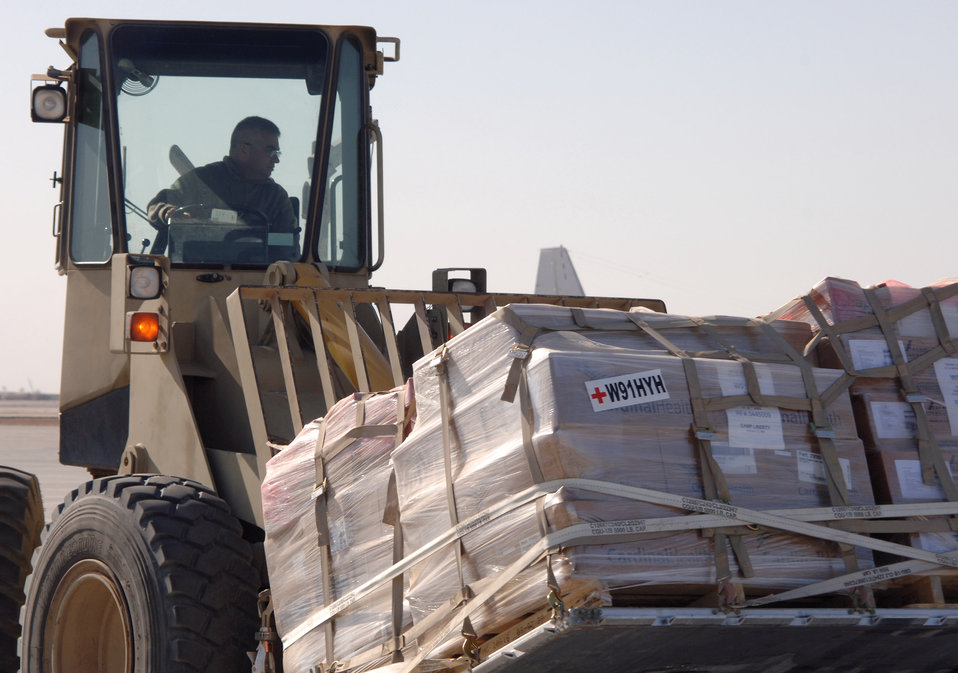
Aerial porters keep convoys off the road

Master Sgt. Rogue Fuentes loads cargo onto a C-130 Hercules aircraft Balad Air Base, Iraq. Sergeant Fuentes, an aerial port flight ramp service technician with the 332nd Expeditionary Logistics Readiness Squadron, is a reservist deployed from the 74th Aerial Port Squadron at Lackland Air Force Base, Texas.